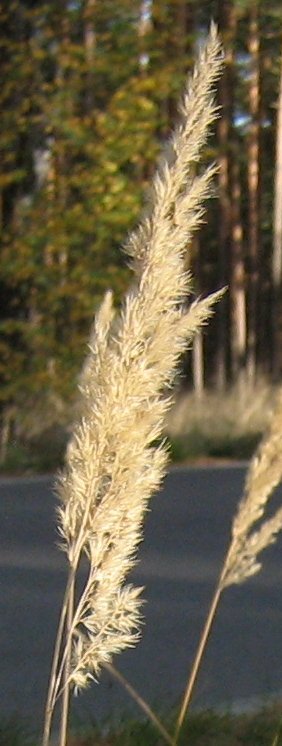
Deutsch: Calamagrostis epigejos - Landreitgras